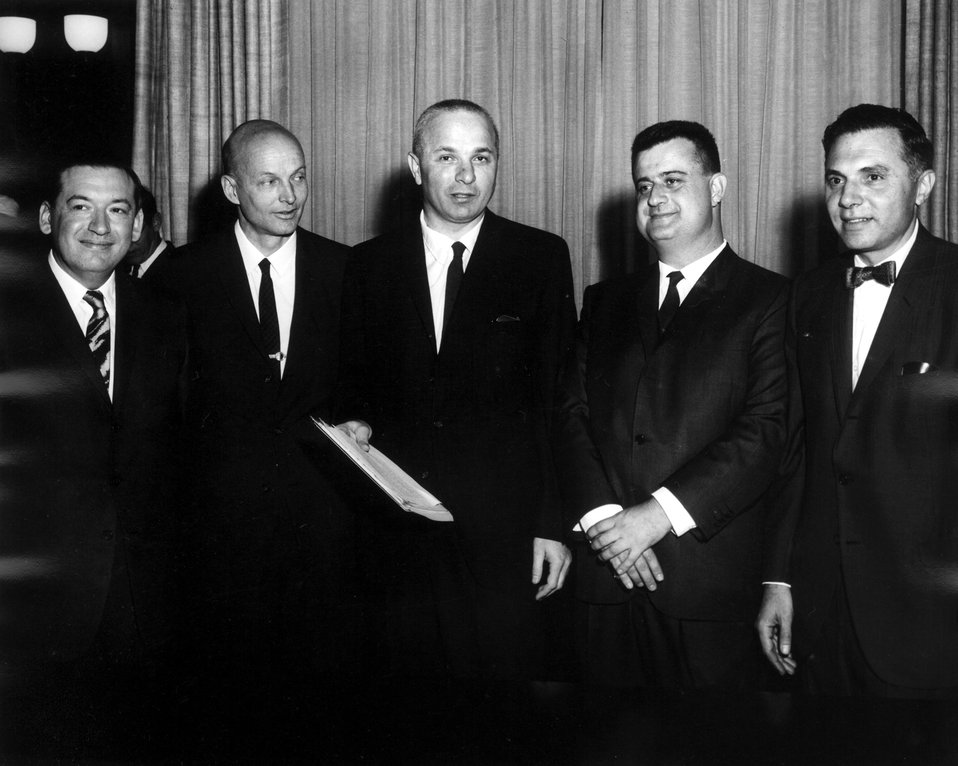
Lawrence Award, 1966.